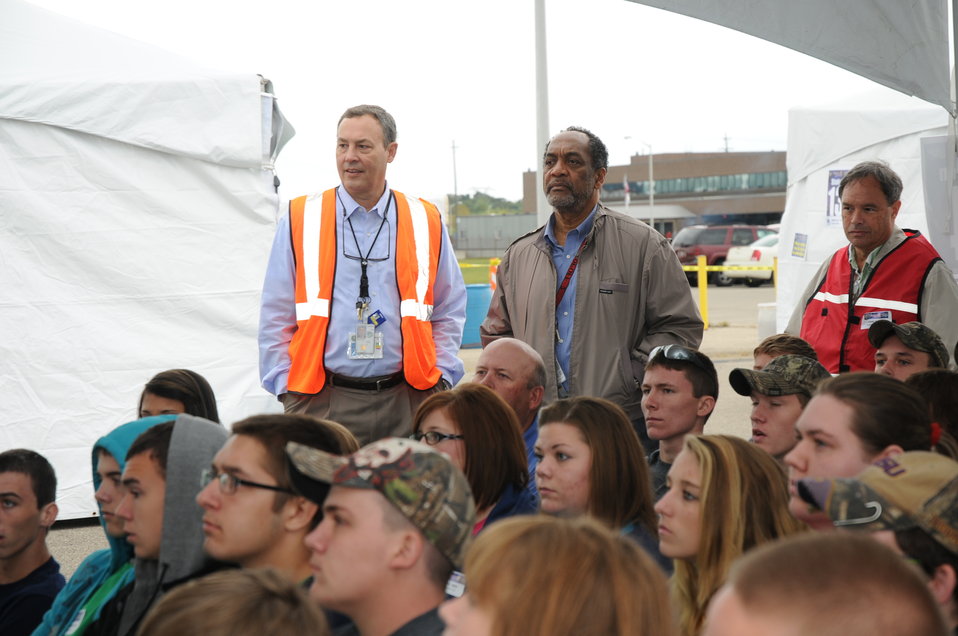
Science Alliance

DOE Site Lead Joel Bradburne, Site Director
Dr. Vince Adams and Science Alliance team member John Zangri of Fluor-B&W join students in watching one of the presentations during the Science Alliance.